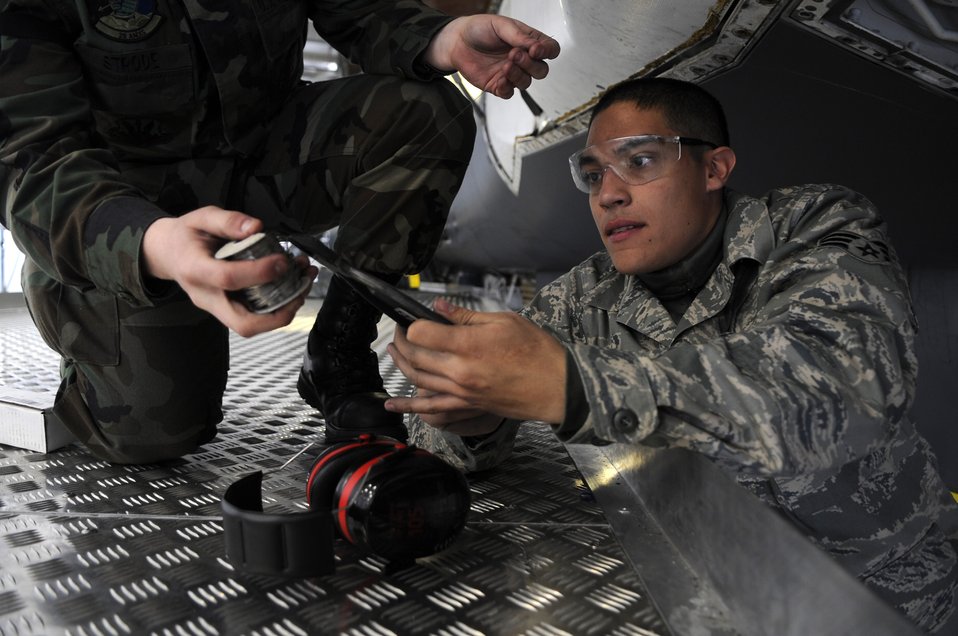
Sniper pod improves capabilities, lethality of B-1

Senior Airman Alexis Soto cuts wire to safety wire a dehydrator on a B-1B Lancer at Ellsworth Air Force Base, S.D., March 19. Airman Soto is assigned to the 28th Air Maintenance Squadron at Ellsworth AFB.